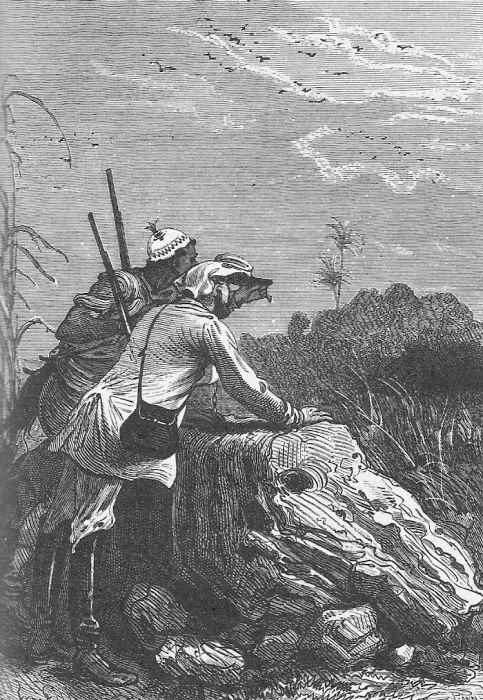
An illustration from Jules Verne's novel 'The Adventures of Three Englishmen and Three Russians in South Africa' (1870) drawn by Jules Férat. Polski: Ilustracja powieści Juliusza Verne'a 'Przygody trzech Rosjan i trzech Anglików w południowej Afryce' (1870) autorstwa Julesa Férata. Français : Jules Verne: 'Aventures de trois russes et de trois anglais dans l’Afrique australe' (1870), dessins par Jules Férat.